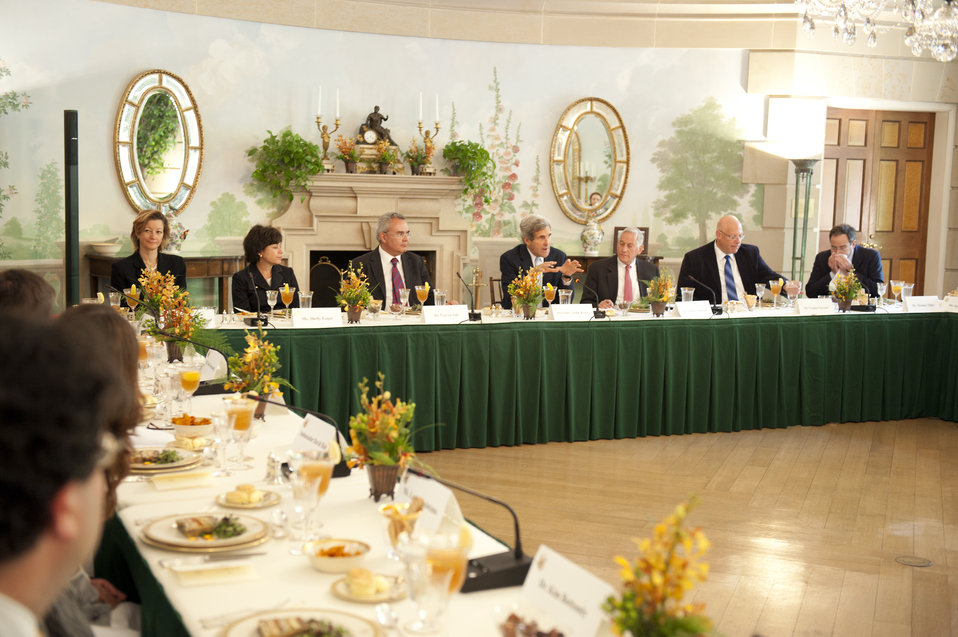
Secretary Kerry Delivers Remarks to Members of Partners for a New Beginning

U.S. Secretary of State John Kerry delivers remarks to members of Partners for a New Beginning (PNB) at the Blair House in Washington, D.C., on May 3, 2013.